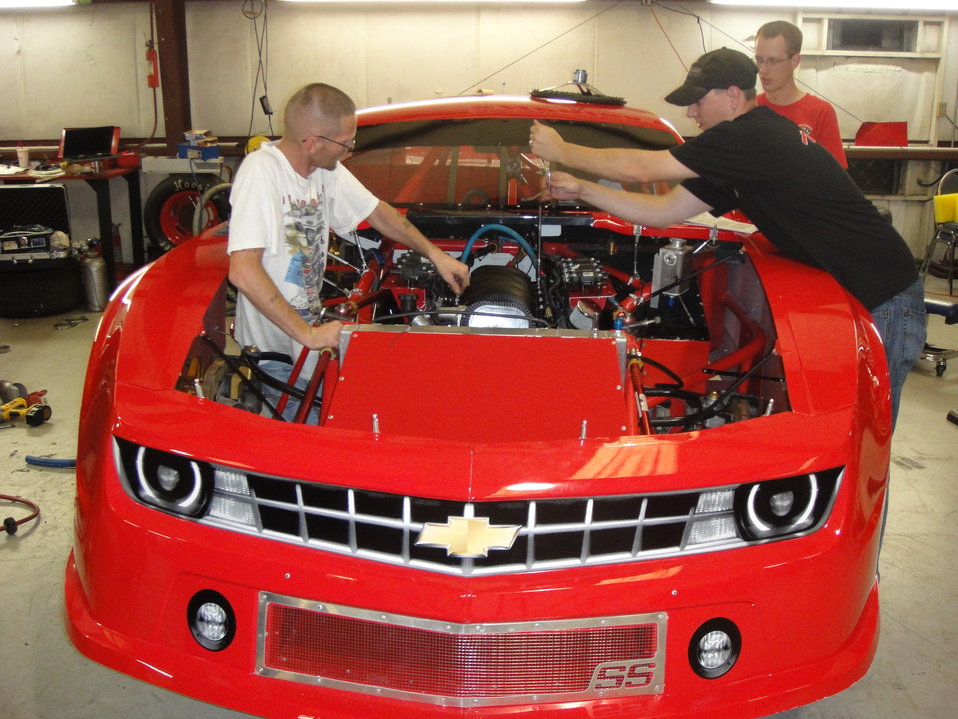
Building flex fueled powered project G.R.E.E.N Camaro.